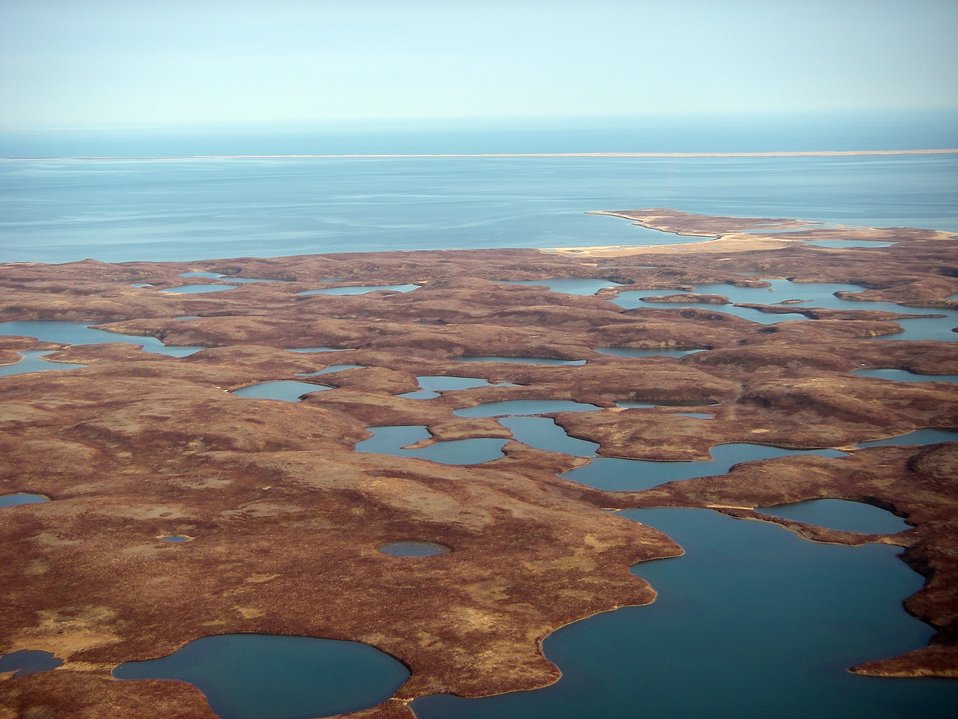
View to Blaine Point

Wilderness north of Kinzarof Lagoon, Izembek National Wildlife Refuge
Photo by Kristine Sowl,
USFWS, Public Domain